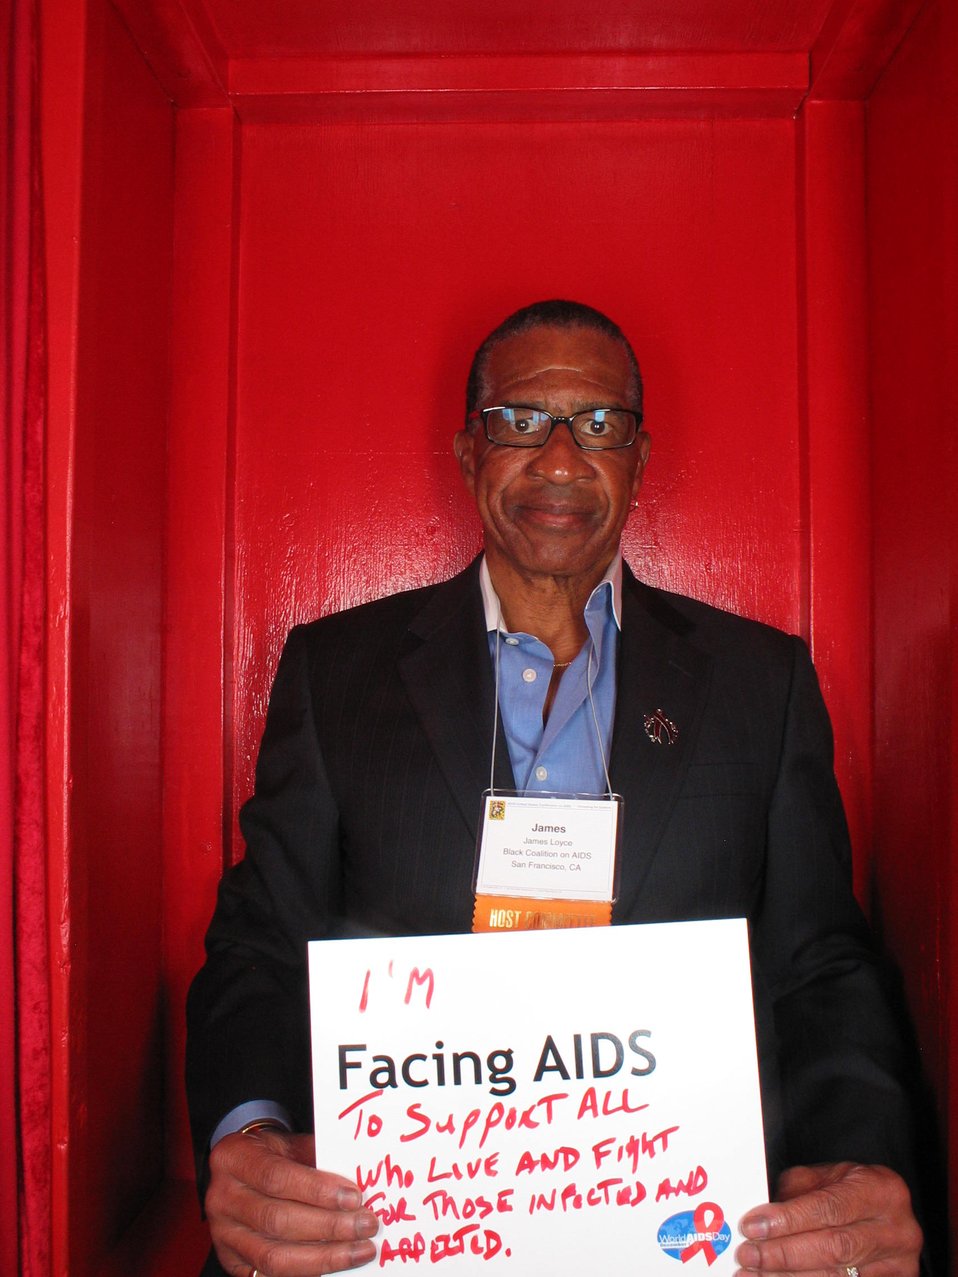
I'm Facing AIDS to support all who live and fight for those infected